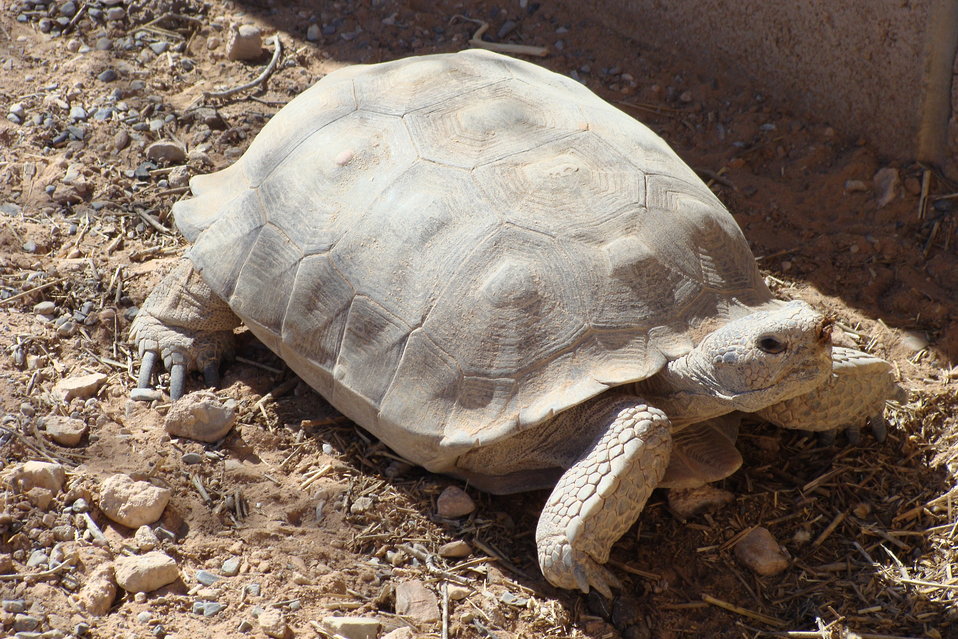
Mojave Desert Tortoise

The U. S. Fish and Wildlife Service has announced the availability of a Revised Recovery Plan for the threatened Mojave population of the desert tortoise (Gopherus agassizii) under the Endangered Species Act (ESA). The Plan takes a new approach to reversing declines in Mojave desert tortoise populations through a coordinated effort of science-based implementation and evaluation of conservation actions.

Unlike the previous Recovery Plan, which focused on mitigation measures, this Plan recognizes the need to adjust to the accelerating pace of environmental change and its impact on key resource management issues, such as corridors and connectivity. The Plan will be a living document that advances a natural resource management model where ongoing detection of changes and attribution of causes will provide the basic information on whether or not the desert tortoise or its ecosystem is changing beyond natural variability.

By continuous examination of vulnerability, exposure, sensitivity, and adaptive capacity of the desert tortoise to environmental change, resource managers will be able to update the Plan as it is being implemented with conservation measures that will help the desert tortoise recover.